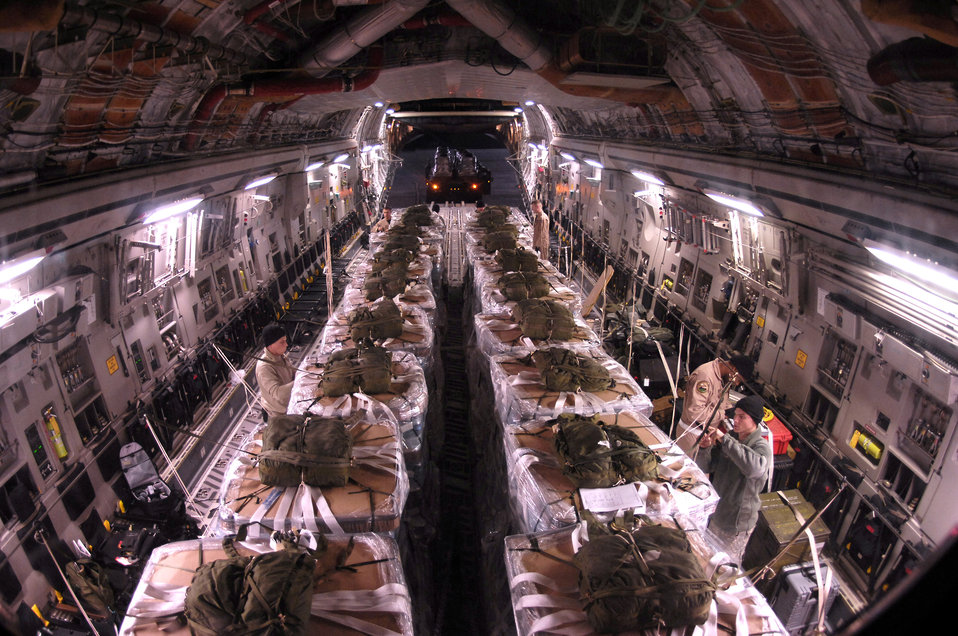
Another vital mission ready to go

Airmen and Soldiers load 40 pallets of water onto a C-17 Globemaster III Dec. 19 at Manas Air Base, Kyrgyzstan for an airdrop mission over Afghanistan.